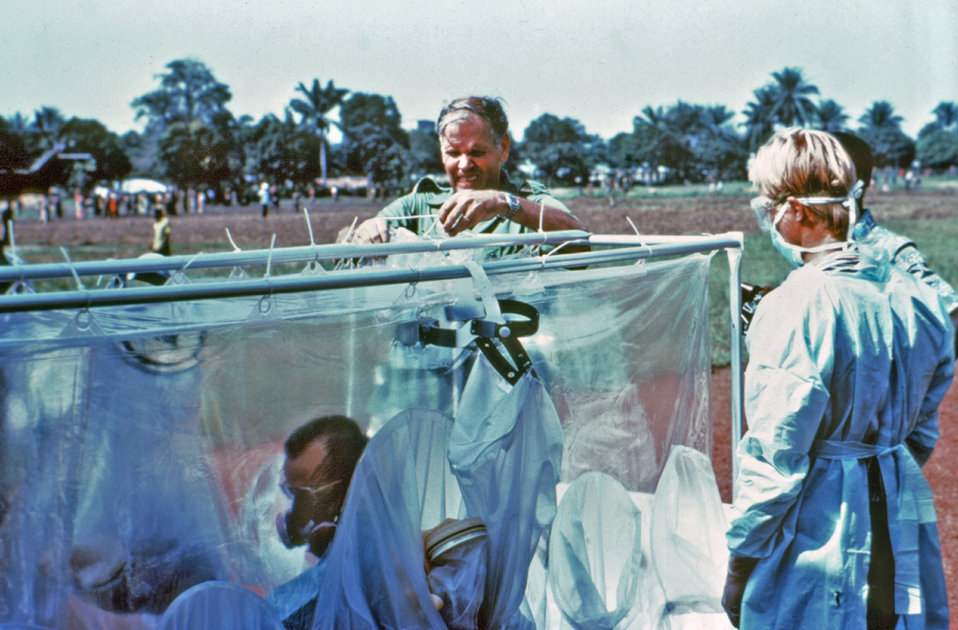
This 1976 photograph shows CDC staff member Dr. Stan Foster (center) fastening a make-shift bottle anchor to the isolation unit of a suspected Ebola patient, Del Conn.